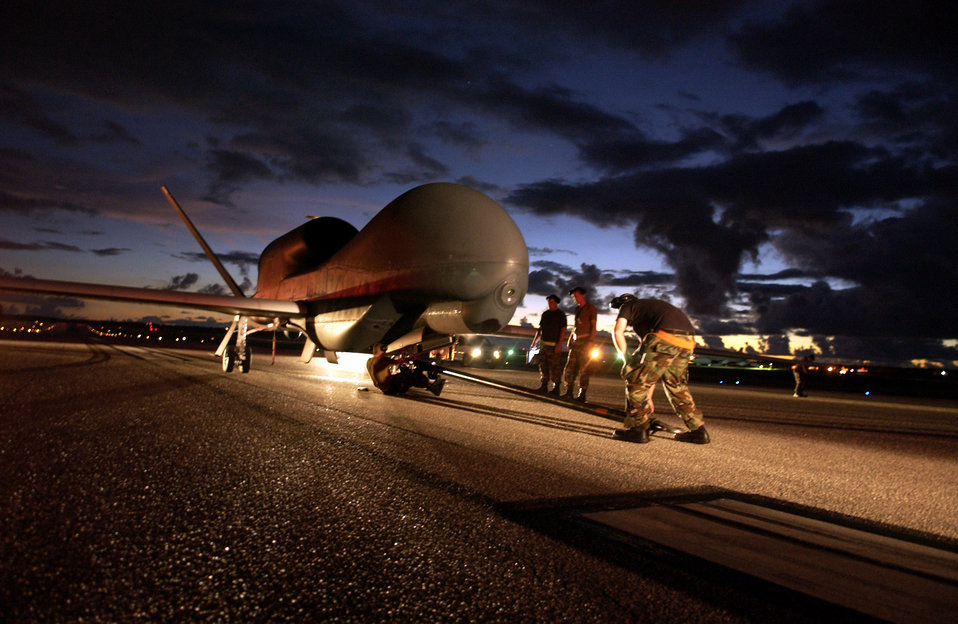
Beale Global Hawk deploys for first time

A flightline ground crew secures the Global Hawk unmanned aircraft system for towing to a secure hangar July 19 at Andersen Air Force Base, Guam. The UAS has a win span of 116 feet and is designed to cruise at extremely high altitudes. This marked the first time a Global Hawk deployed in support from the 9th Reconnaissance Wing at Beale Air Force Base, Calif.